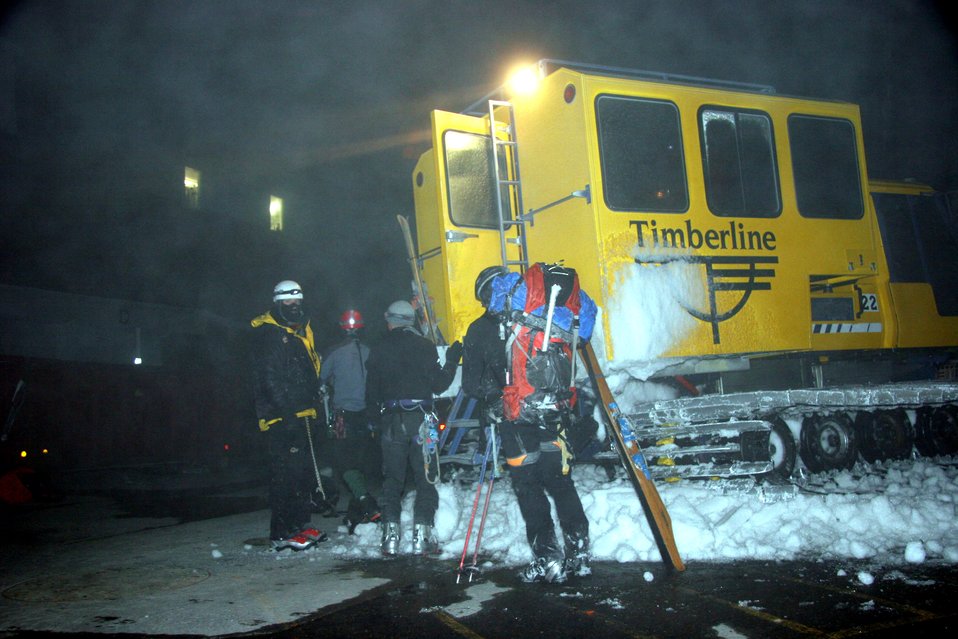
PJs help rescue skier off glacier

Tech. Sgt. John Davis (far left) waits outside a snow cat for other members of a rescue team on Mount Hood, Ore., on Saturday, May 6, 2006. The Air Force Reserve Command's 304th Rescue Squadron in Portland, Ore., was called out to help local rescue teams recover a man who fell down a 300-foot slope while skiing on Mount Hood. Sergeant Davis is a pararescueman with the 304th RQS.